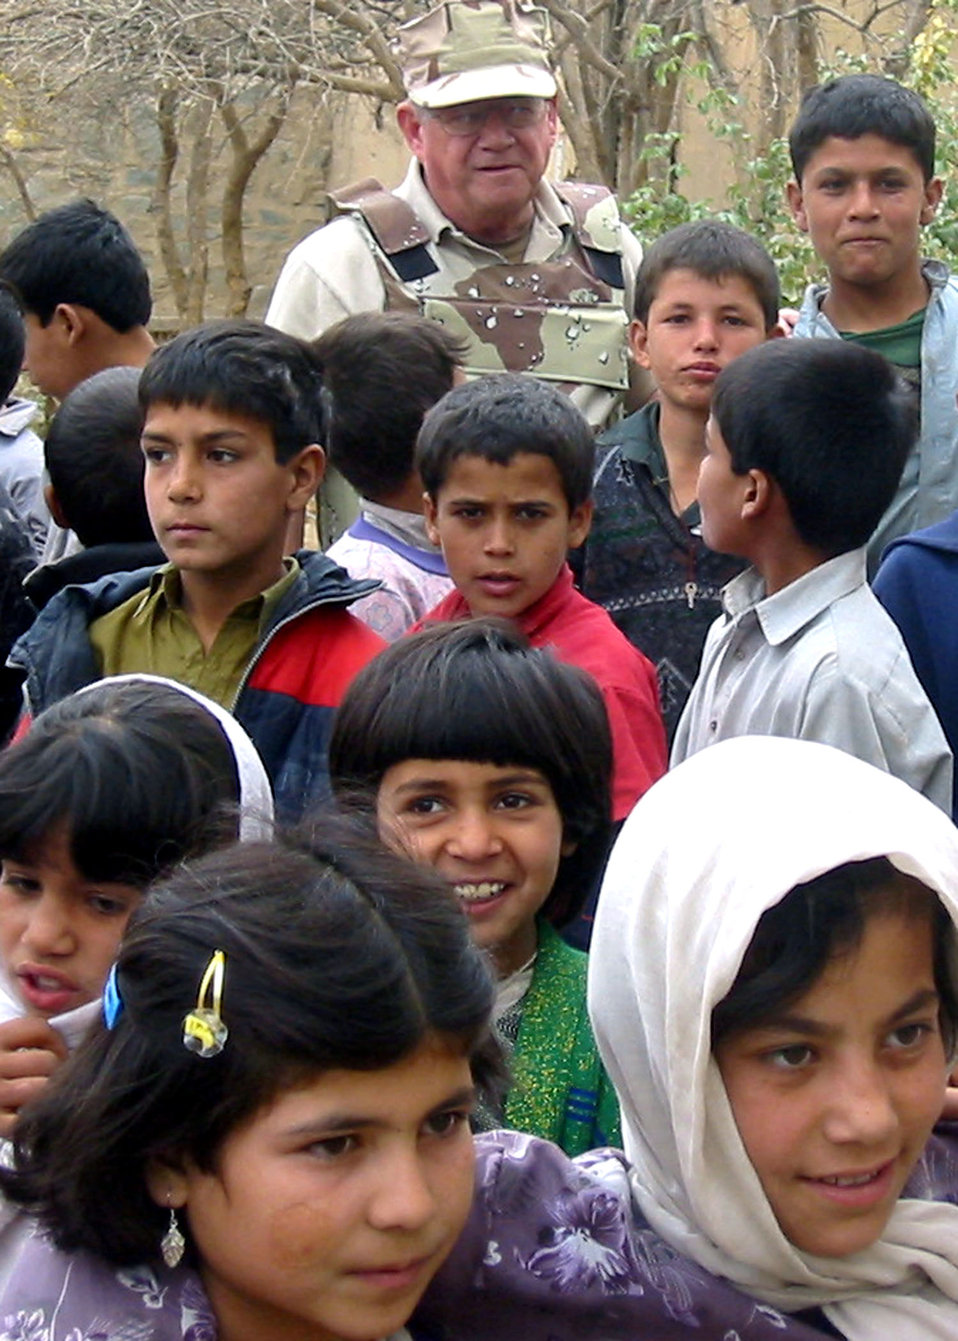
Flag-flying donations warm American hearts, Afghan feet

CHARIKAR, Afghanistan -- Barry McKelvy stands with a group of Afghan children here. He visited the village orphanage to help distribute $300 worth of shoes to the children residing in the youth shelter. Funds for the footwear were donations raised through the 455th Air Expeditionary Wing's flag-flying program at nearby Bagram Air Base. Mr. McKelvy is an airfield manager participating in the Air Force Contract Augmentation Program.